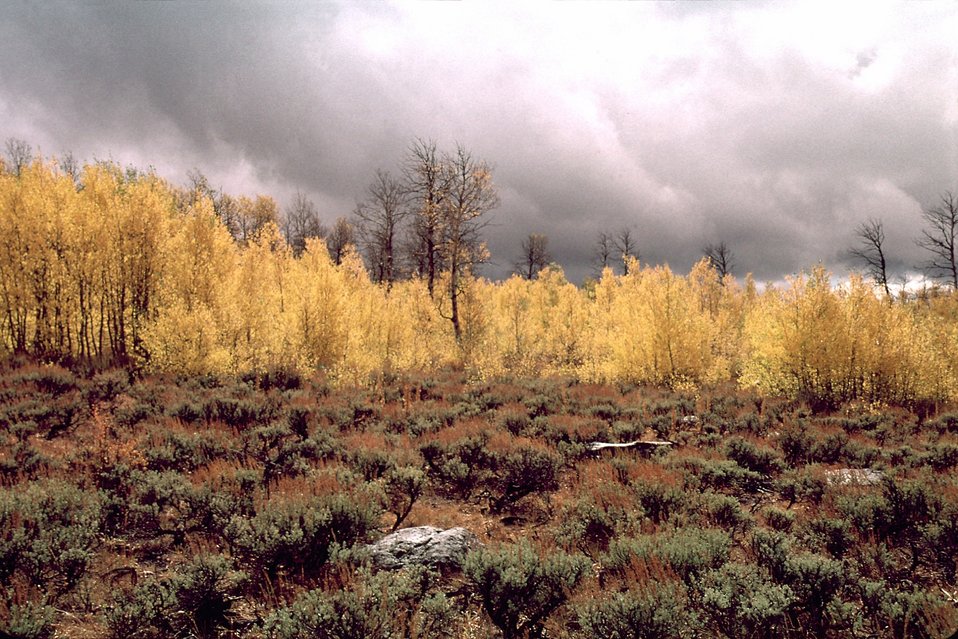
Aspens at Fish Lake, Steen's Mountain.